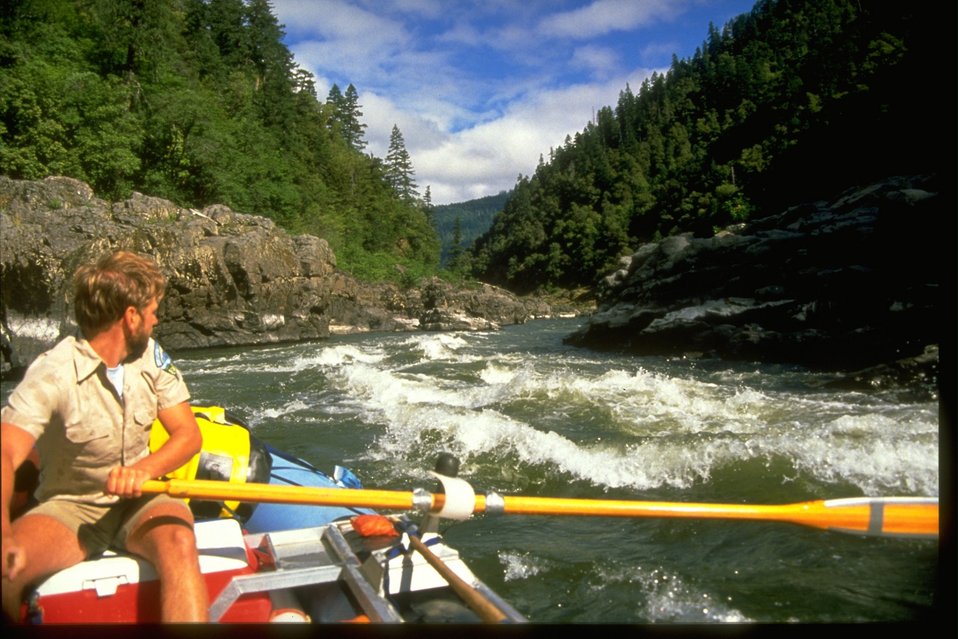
BLM workers rafting down the Wild Section of the Rogue River.